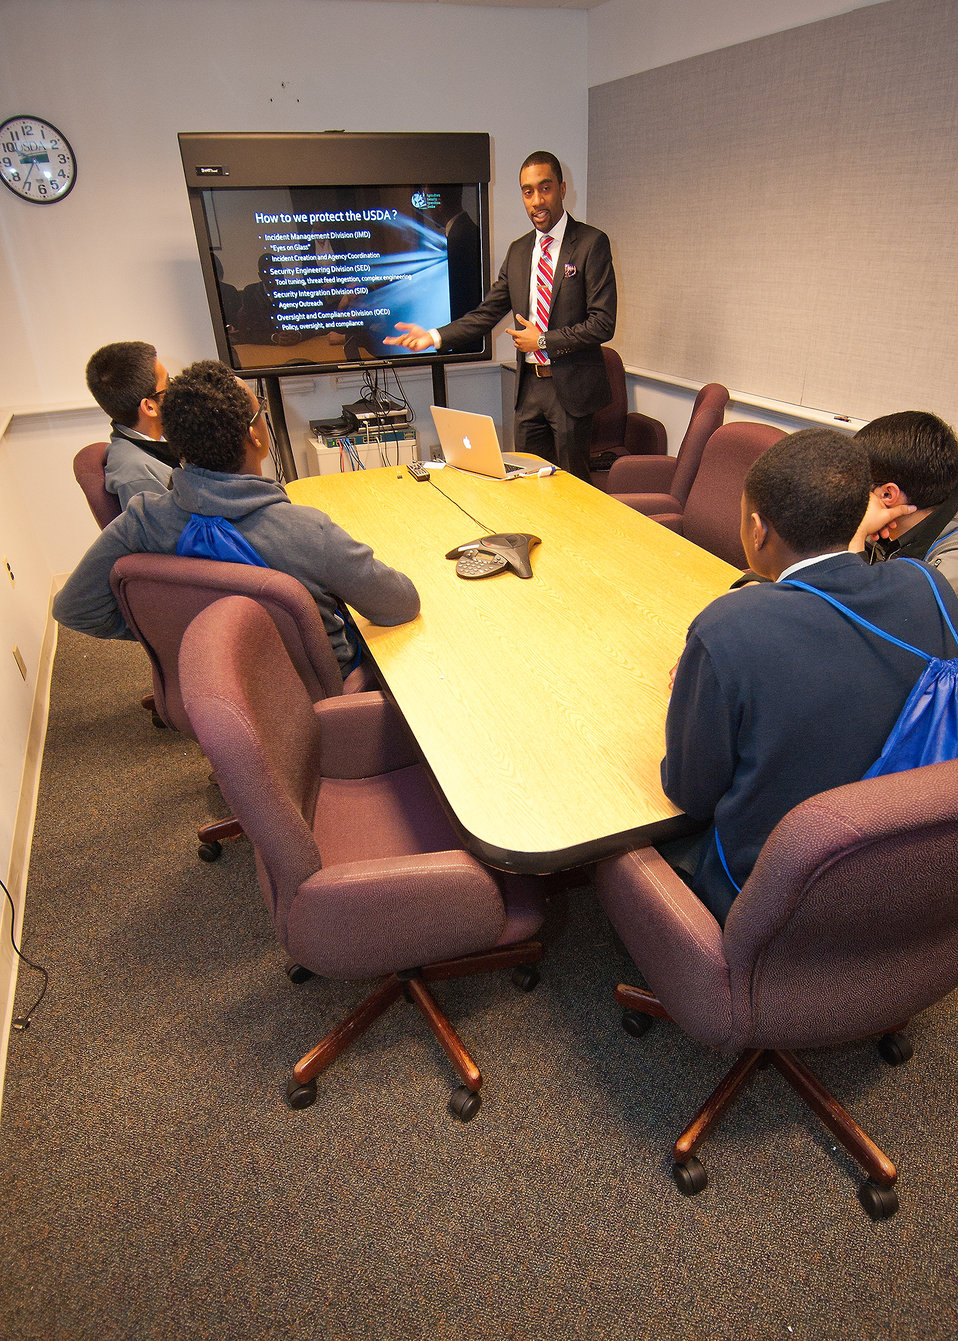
U. S. Department of Agriculture (USDA) Cyber Security specialist Richie Cyrus explains cyber security to students from Edison Academy in Fairfax, VA during the annual USDA Information Technology (IT) Job Shadow Day held by the USDA Office of the Chief Information Officer (OCIO) to introduce local high school students to careers in information technology in Washington, D.C. on Tuesday, Apr. 2, 2013.